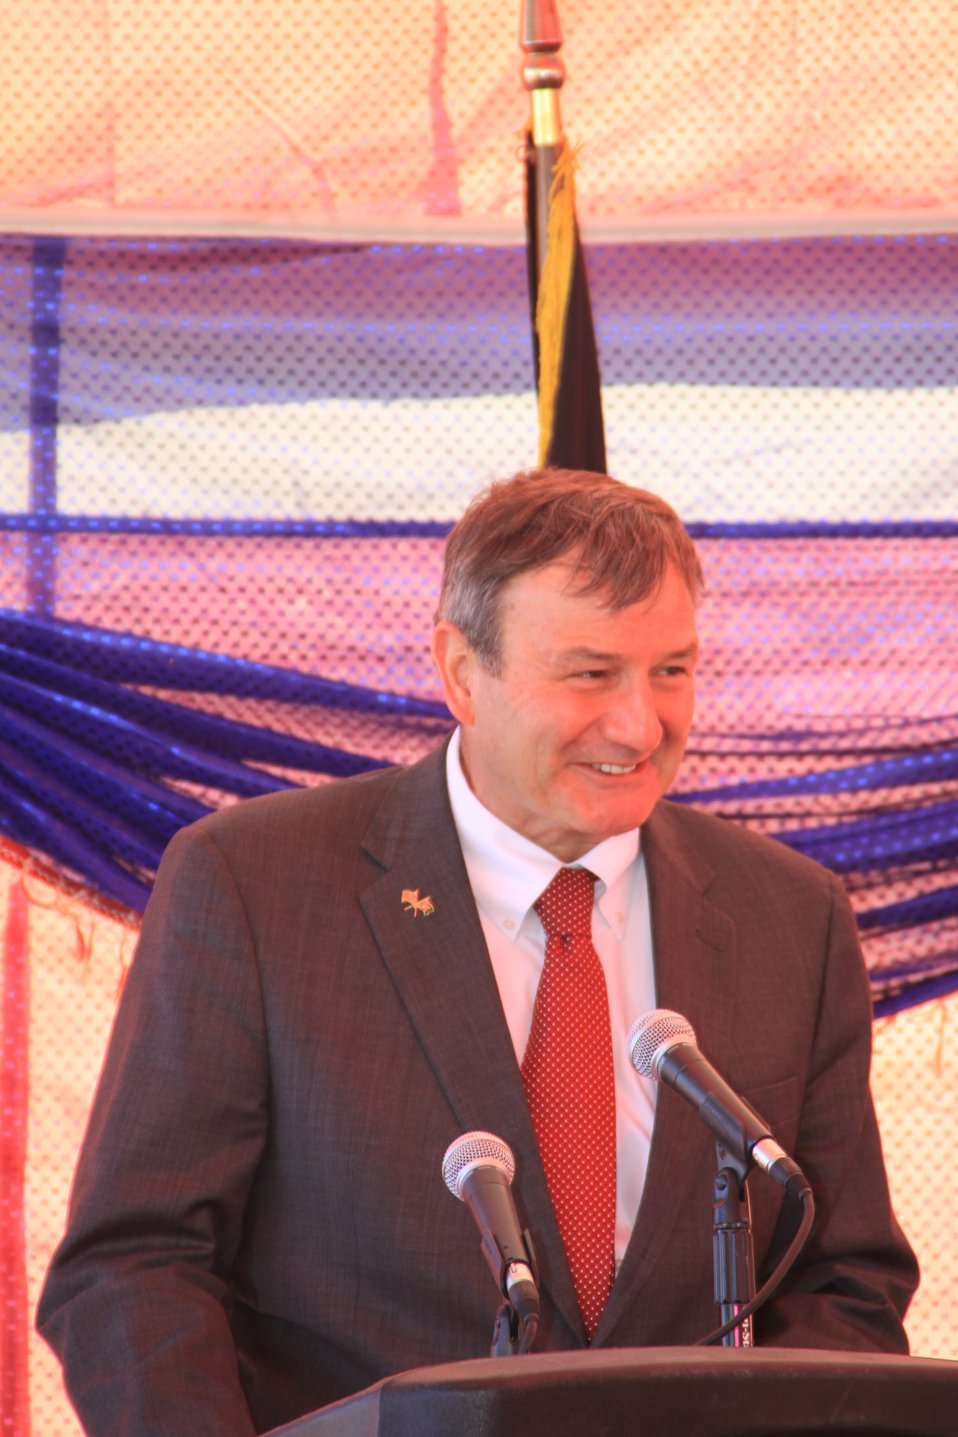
AVIPA Plus Wheat Seed Distribution 101005